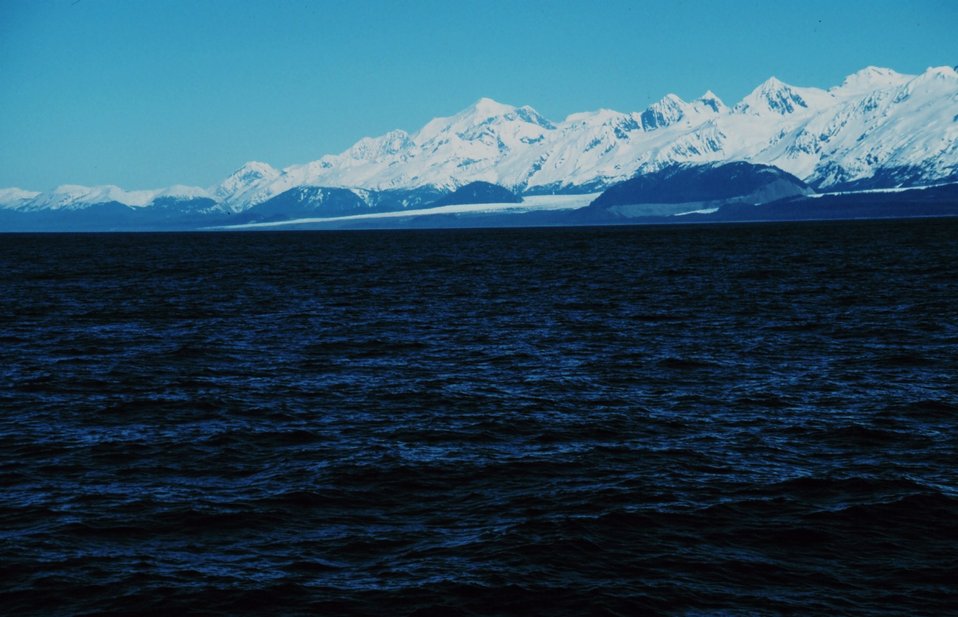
Enroute to Prince William Sound -Mt. St. Elias is high peak in left-center